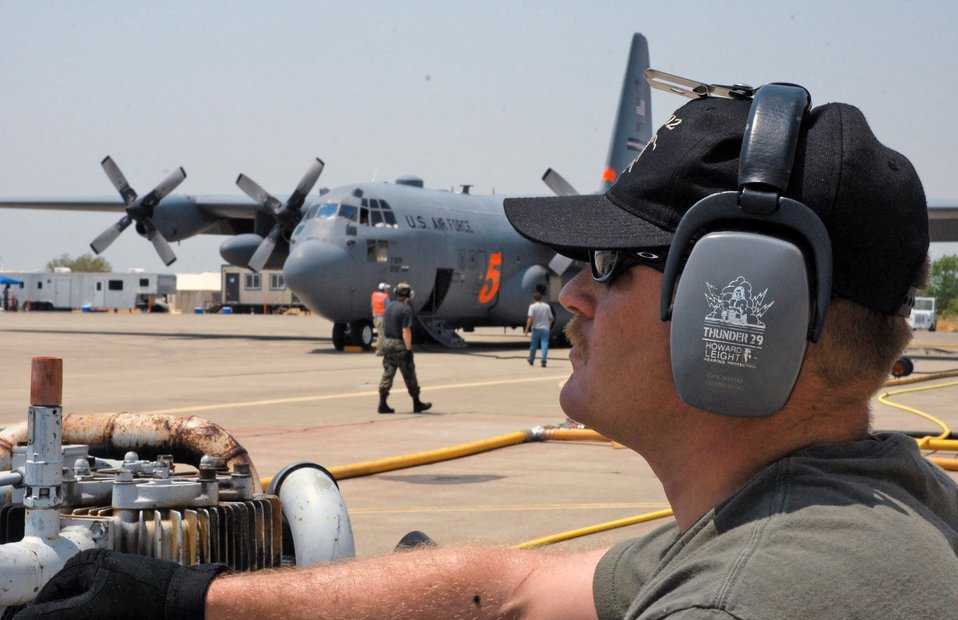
Third Reserve C-130 joins California wildfire fight

Michael Docklam watches as ground crews refill a C-130 Hercules with fire retardant prior to a firefighting mission June 29 at McClellan Airfield, Sacramento, Calif. Mr. Docklam is an aircraft structural repair specialist assigned to the 302nd Air Expeditionary Group. The 302nd AEG, responsible for eight aircraft, is currently fighting the Corral and Piute fires, each about 200 miles north and south of the California capital.